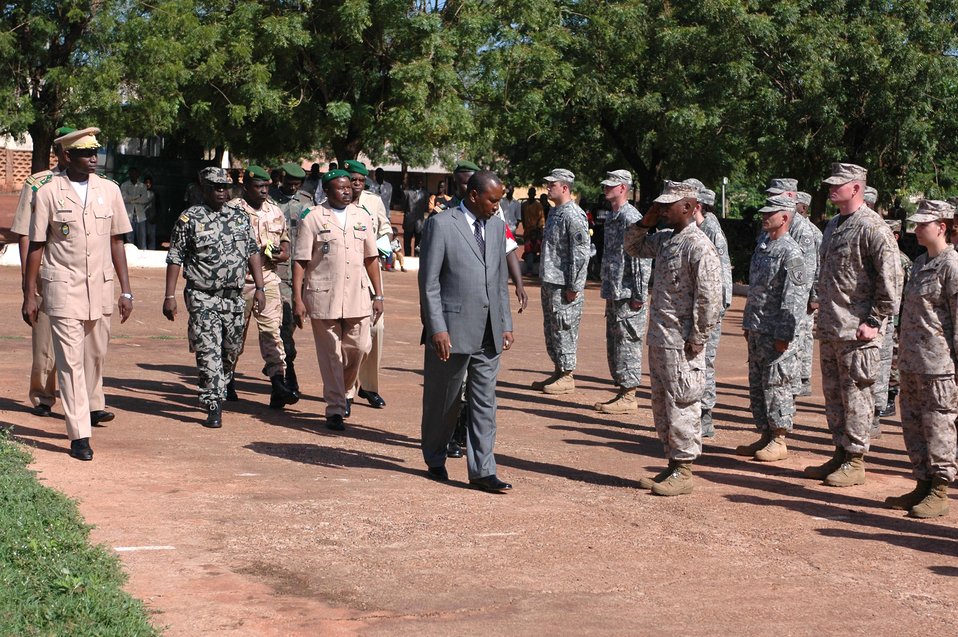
MEDFLAG 08 kicks off

Natie Plea, Mali Minister of Defense and Veterans, greets the MEDFLAG 08 team July 14 during an opening ceremony parade for the two-week long mission. More than 90 servicemembers deployed to Bamako, Mali, July 11 for MEDFLAG 08, a multinational medical training exercise designed to enhance medical capabilities and readiness for U.S. and African forces.